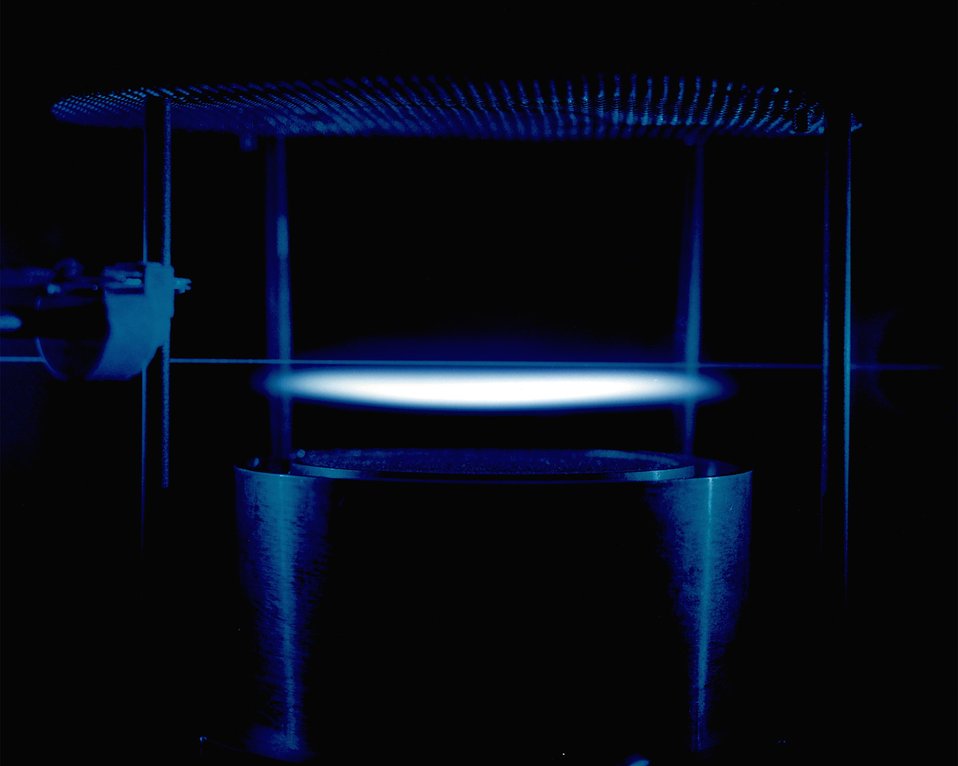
LOW PRESSURE AMMONIA FLAME MEASUREMENTS.

SCIENTISTS USE ADVANCED LASERS AND COMPUTERS AT THE 50,000 SQUARE FOOT, FOUR-BUILDING COMBUSTION RESEARCH FACILITY TO STUDY EXACTLY HOW AND WHY FUELS BURN. IN THE LABORATORY BUILDING, SPECIAL LASER SYSTEMS WITH BEAMS ARE DISTRIBUTED TO 14 INDIVIDUAL LABORATORIES. EACH LABORATORY IS SERVED BY A MINICOMPUTER WHICH IS CONNECTED TO A CENTRAL DATA SYS- TEM. IN ADDITION TO BENCH-TOP FLAME STUDIES, THE FACILITY HOUSES SEVERAL MAJOR COMBUSTION EXPERIMENT LABS, INCLUDING FIVE OPTICALLY PORTED RESEARCH ENGINES, A COMPUTER-CONTROL- LED COMBUSTION BOMB, AND LOW-PRESSURE FLAME, COAL FLAME, AND TURBULENT FLAME LABORATORIES. THESE STUDIES COULD LEAD TO THE DESIGN OF HEAT ENGINES AND ENERGY SYSTEMS THAT BURN FUEL MORE EFFICIENTLY WHILE CREATING LESS POLLUTION.